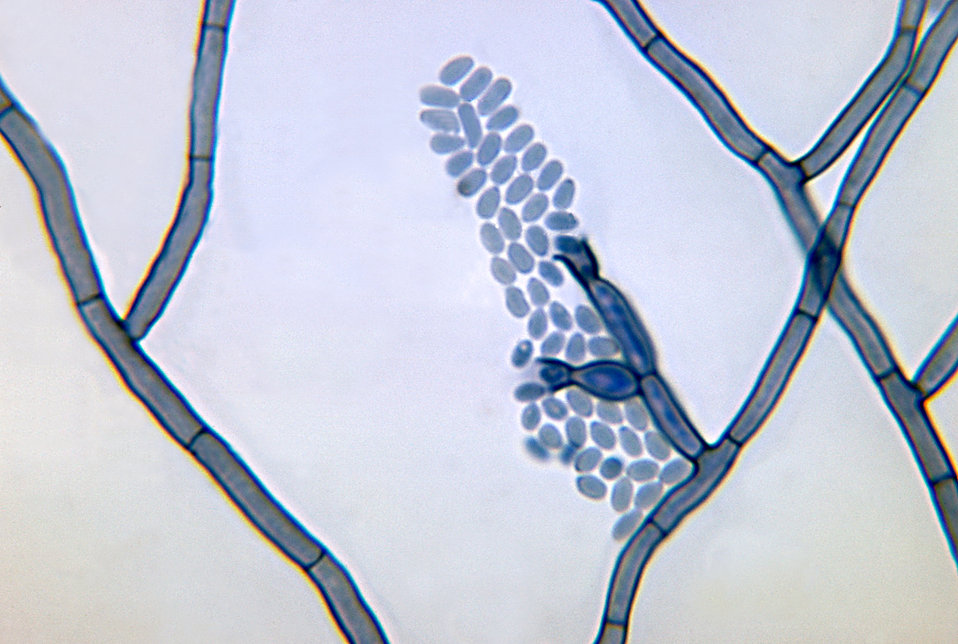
This photomicrograph depicts a conidia-laden conidiophore of a Phialophora verrucosa fungal organism from a slide culture